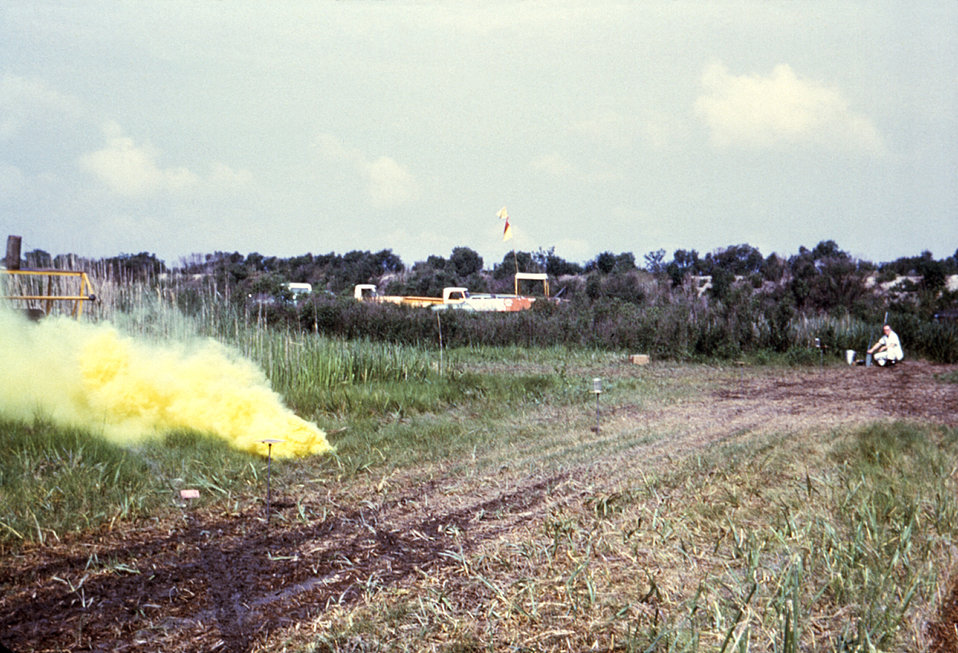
This 1981 photograph depicts a vector-control field technician releasing a yellow smoke marker demarcating an agricultural region to which an ultra-low volume (ULV) insecticidal fog is to be applied.